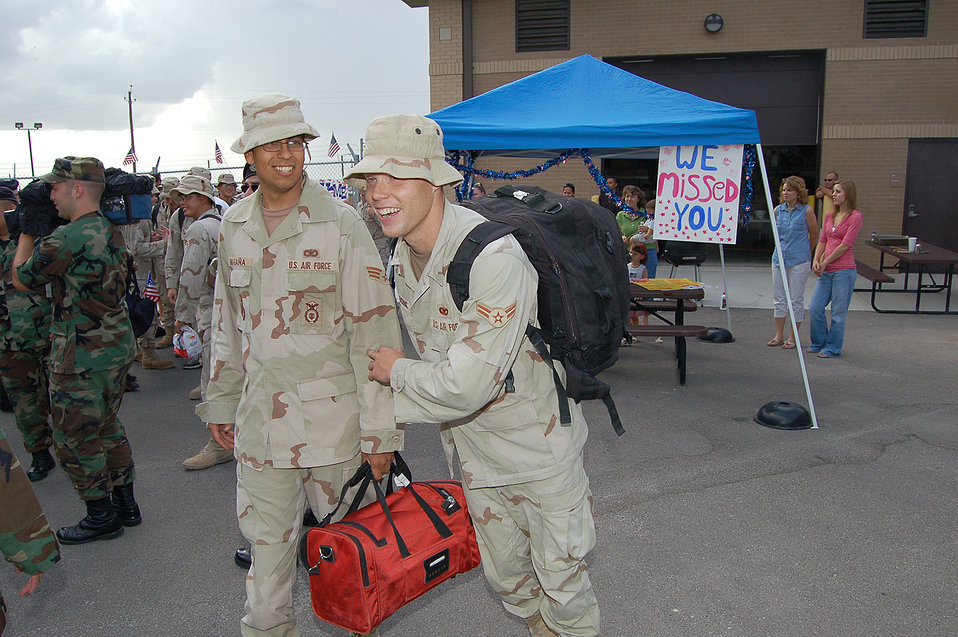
OIF return

Airmen rush to meet friends and family after arriving at the 47th Security Forces Squadron at Laughlin Air Force Base, Texas Aug. 29, after serving a nine-month deployment in support of Operation Iraqi Freedom.